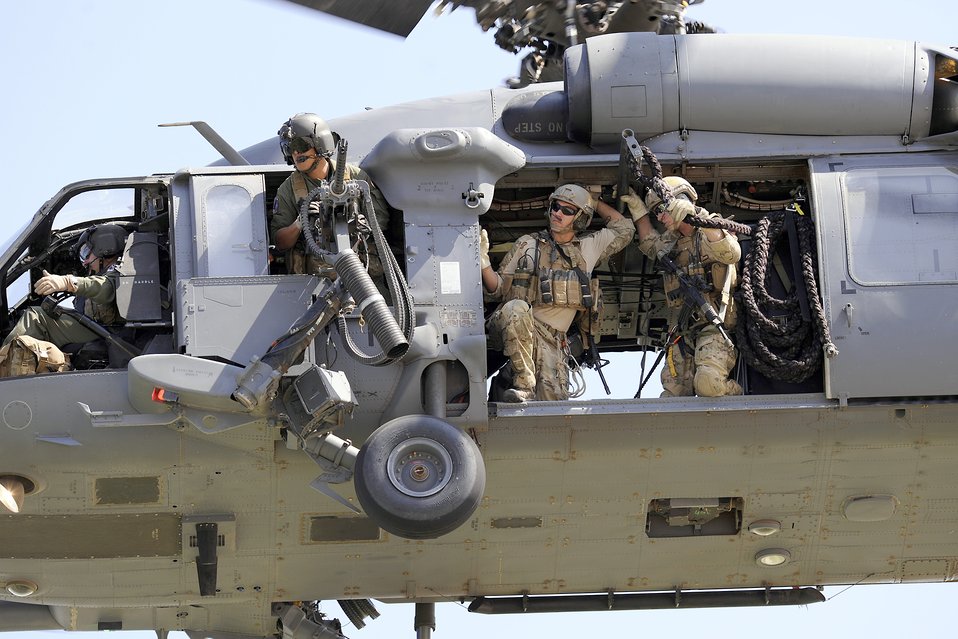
Search and rescue demonstration

An HH-60 Pave Hawk helicopter crew participates in a combat search and rescue demonstration Oct. 1, 2010, at the U.S. Air Force Academy in Colorado Springs, Colo. The HH-60 and its crew are assigned to Davis Monthan Air Force Base, Ariz.